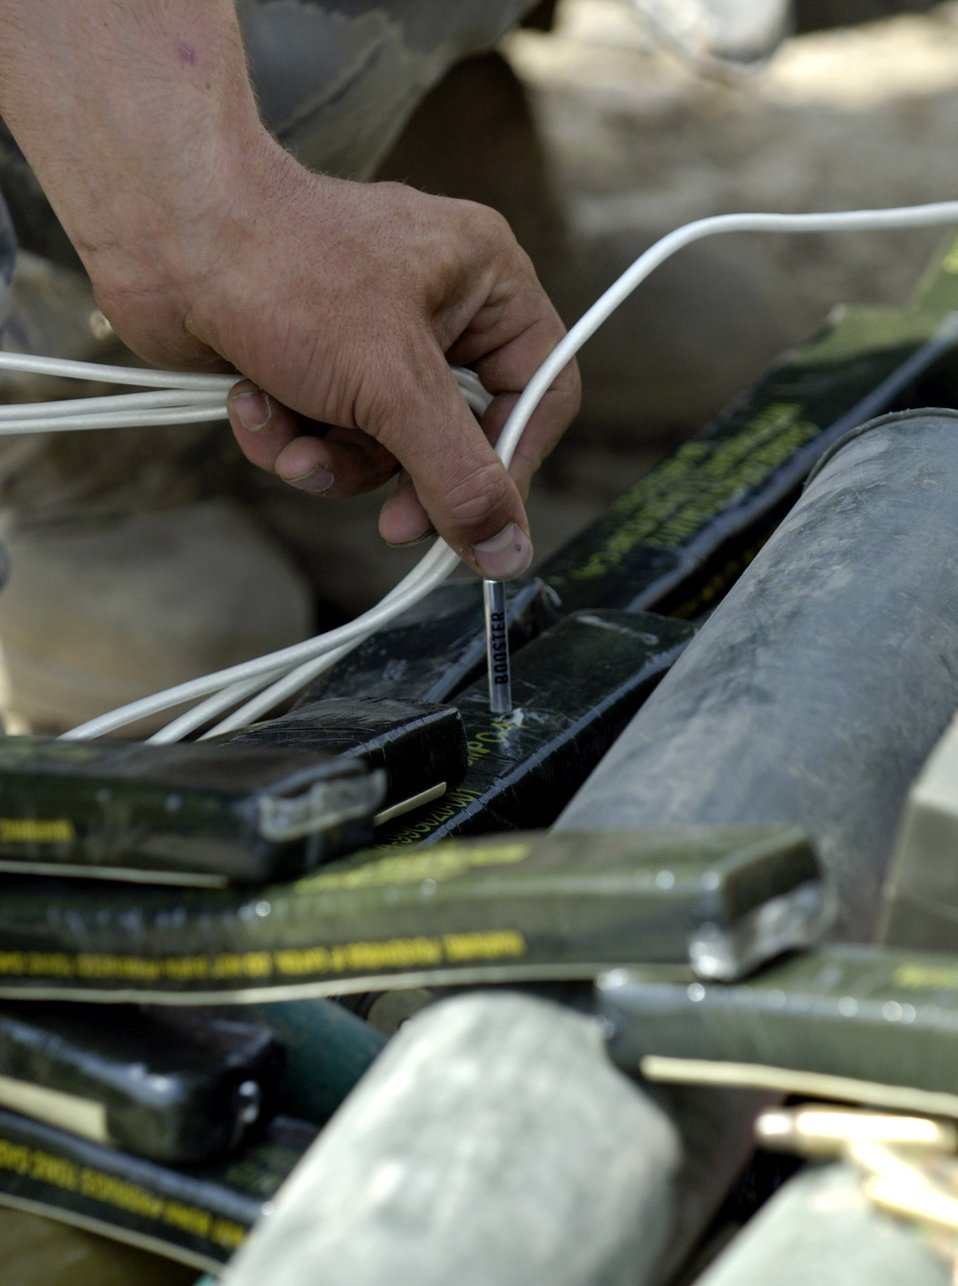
Small rewards program results in big explosion

An Air Force explosive ordnance disposal specialist from Forward Operating Base Mehtar Lam, Afghanistan, readies ammunition for a controlled detonation Sept. 1. Nearly 900 pounds of small arms ammunition, rocket-propelled grenades and mortars were turned in by provincial citizens.